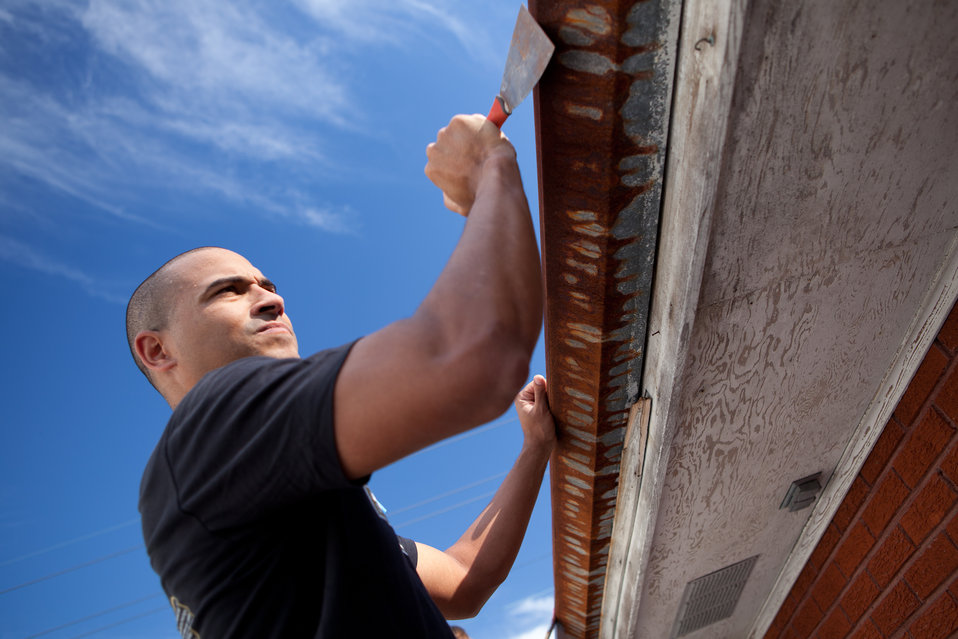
Veteran's Day in New Orleans 9 of 10

Devin Hampton, US Department of Energy scrapes troughs under the hot New Orleans sun.